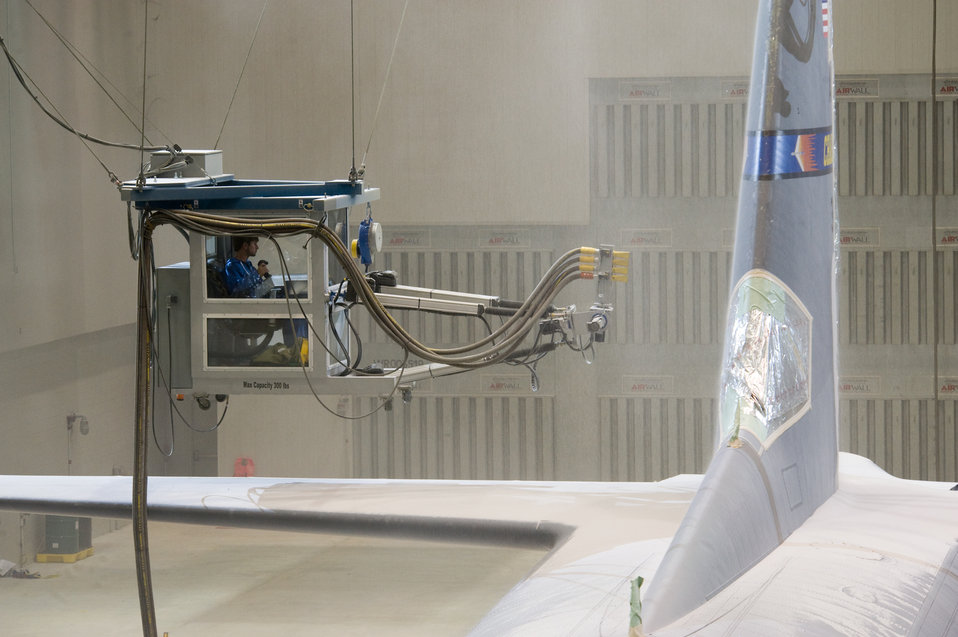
Depaint the big easy way

An aircraft painter, maneuvers one of the four Area Multi-axis Platforms, or AMP, into position to depaint a C-130 Hercules from the North Carolina Air National Guard at Robins Air Force Base, Ga., Oct. 8, 2009. Two of the four AMPs can be seen suspended from overhead rails. The process breaks up the paint and reveals the bare surface underneath it. This environmentally friendly system presents a low hazard to the operators and the environment, while making the depaint process faster. Each AMP does the work of 10 people (four two-person teams with one nozzle to a team, plus additional safety/support personnel).